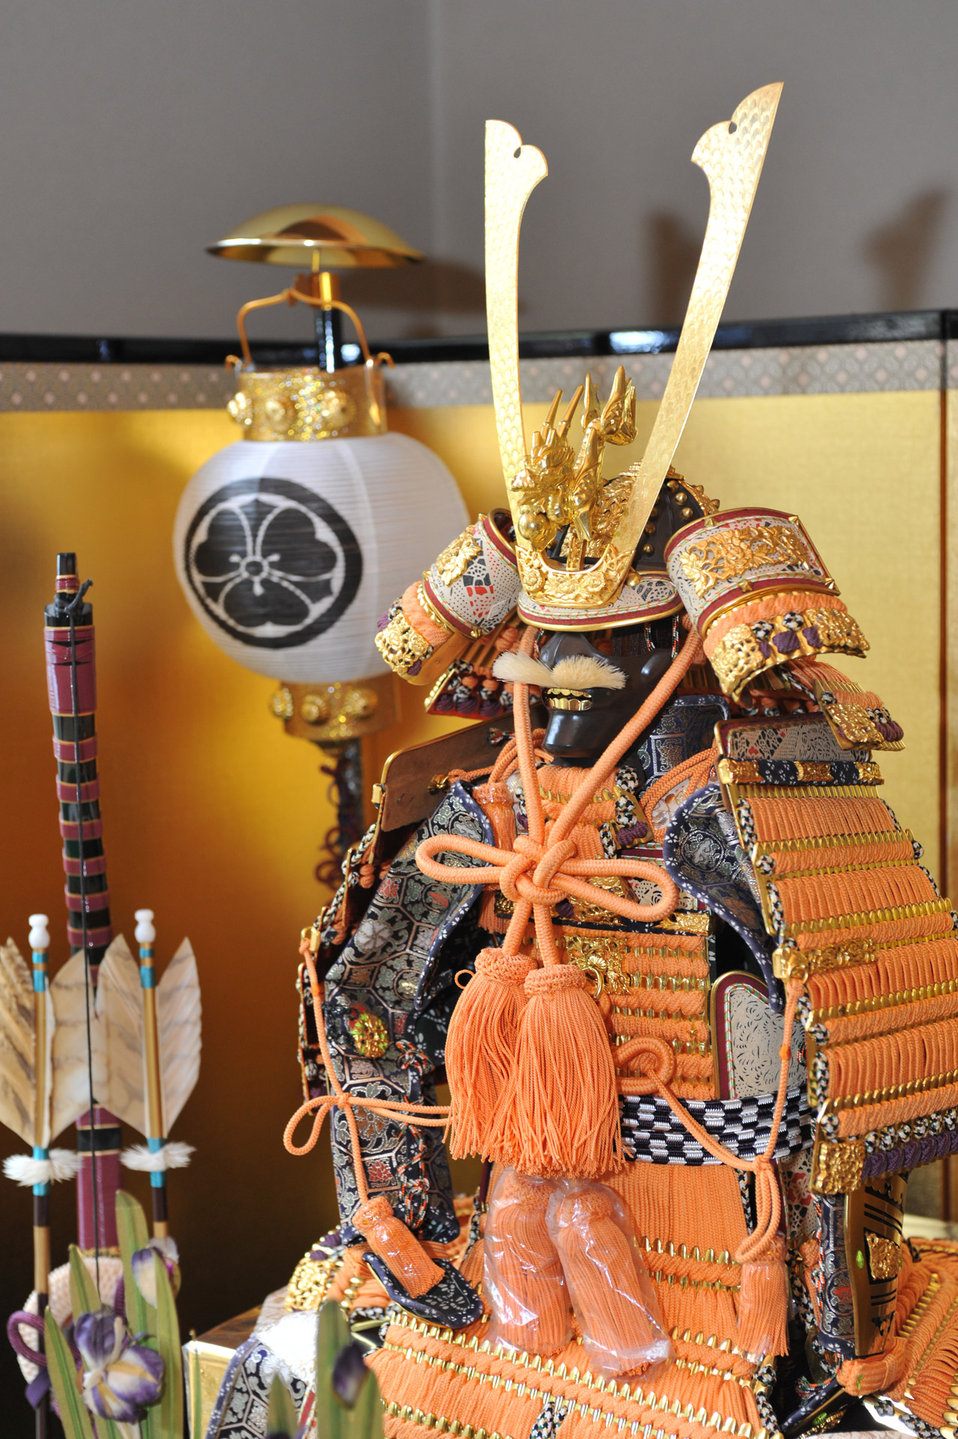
Japanese traditional full armor 2

Japanese traditional full armor.